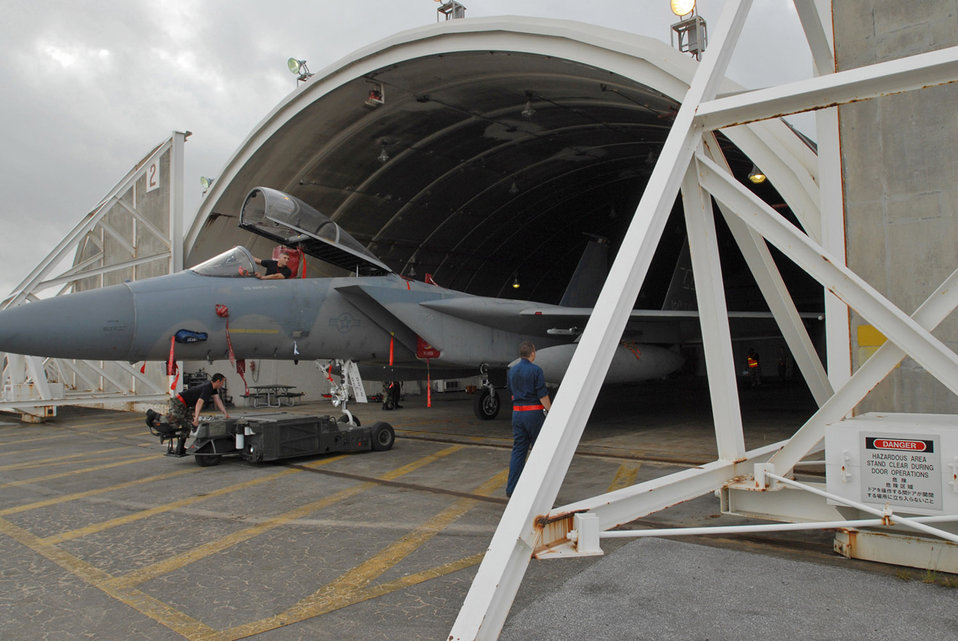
Kadena prepares for typhoon

Airmen from the 18th Aircraft Maintenance Squadron tow an F-15 Eagle into a protective aircraft shelter in preparation for Typhoon Man-Yi July 12 at Kadena Air Base, Japan. Typhoon Man-Yi is expected to hit Okinawa July 13. It is the first typhoon of the year for the island.